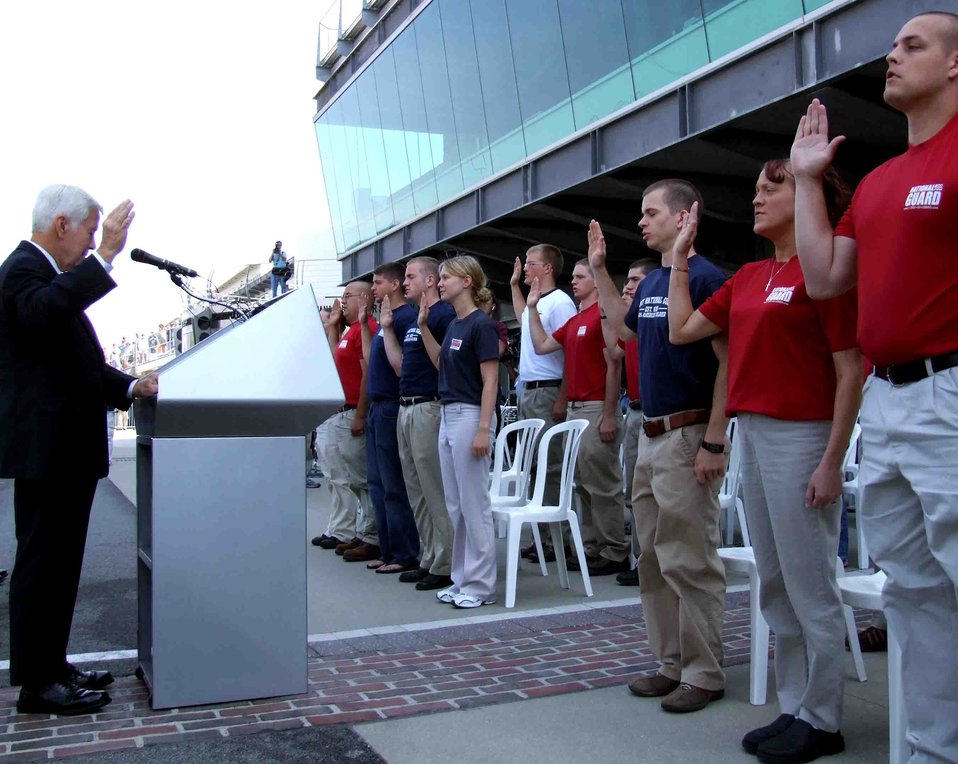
Indy Motor Speedway salutes servicemembers

U.S. Sen. Richard G. Lugar of Indiana gives the oath of enlistment as 61 young people raise their right hands to join the Army, Navy, Marines, Air Force or Coast Guard on May 20 at Indianapolis Motor Speedway.